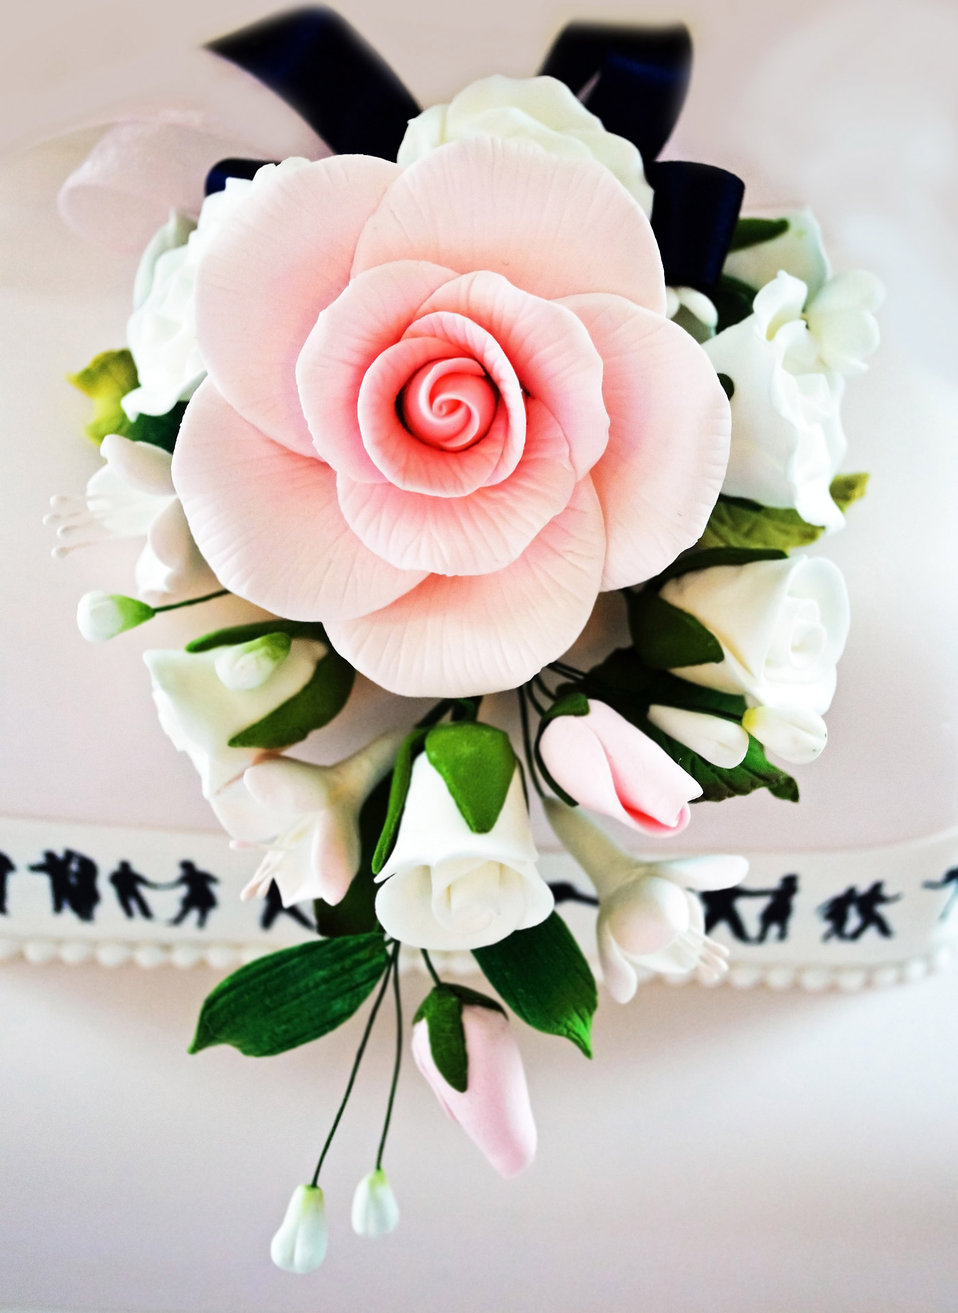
Roses on the cake.